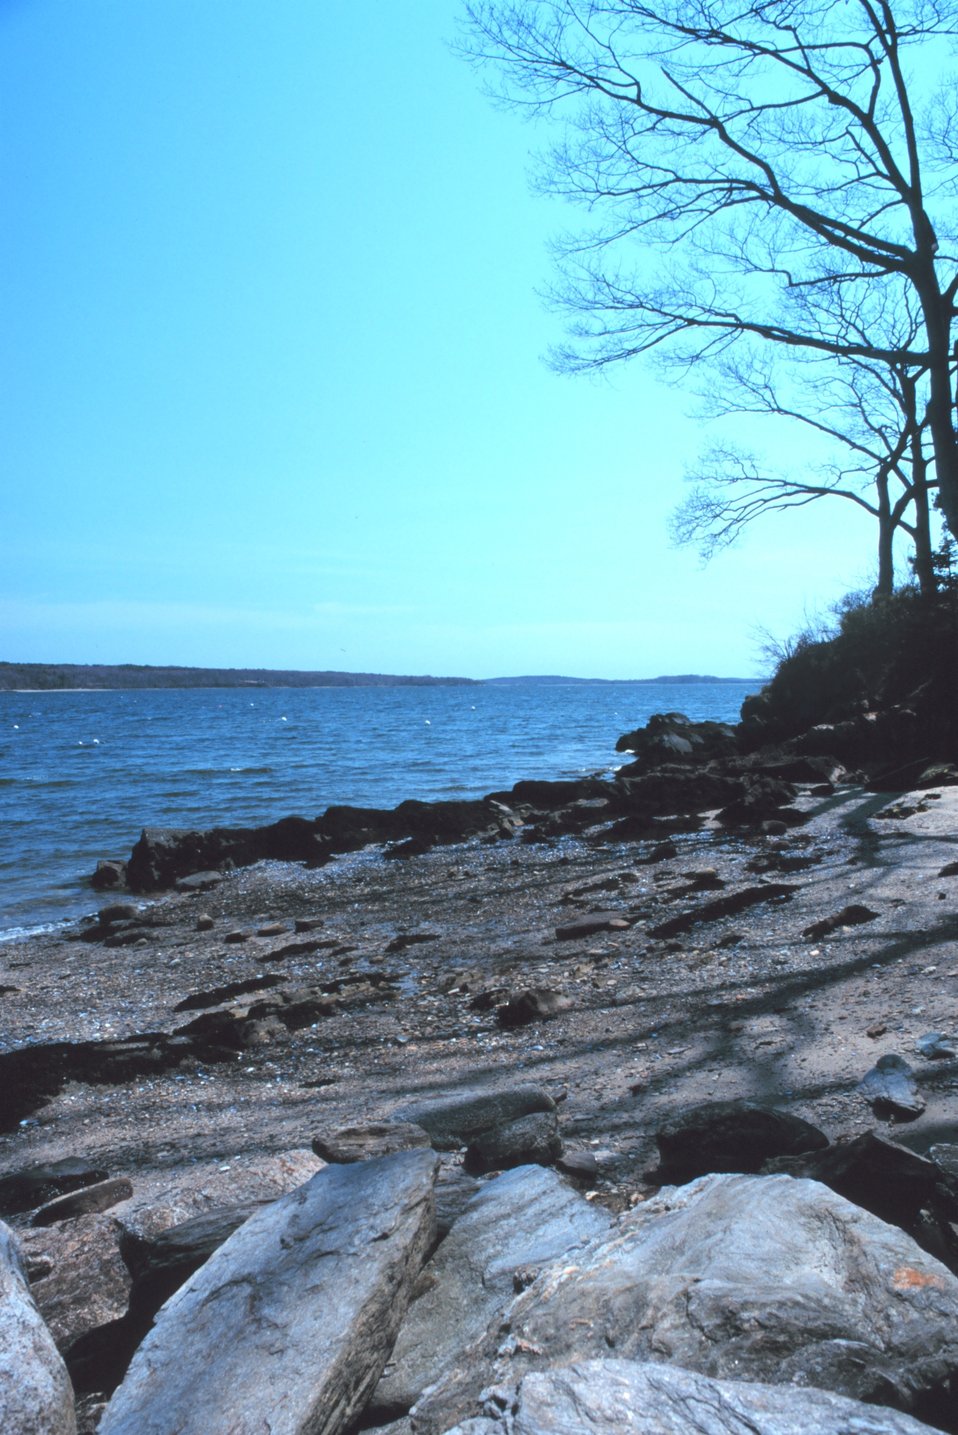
Maine is known for its rocky shoreline